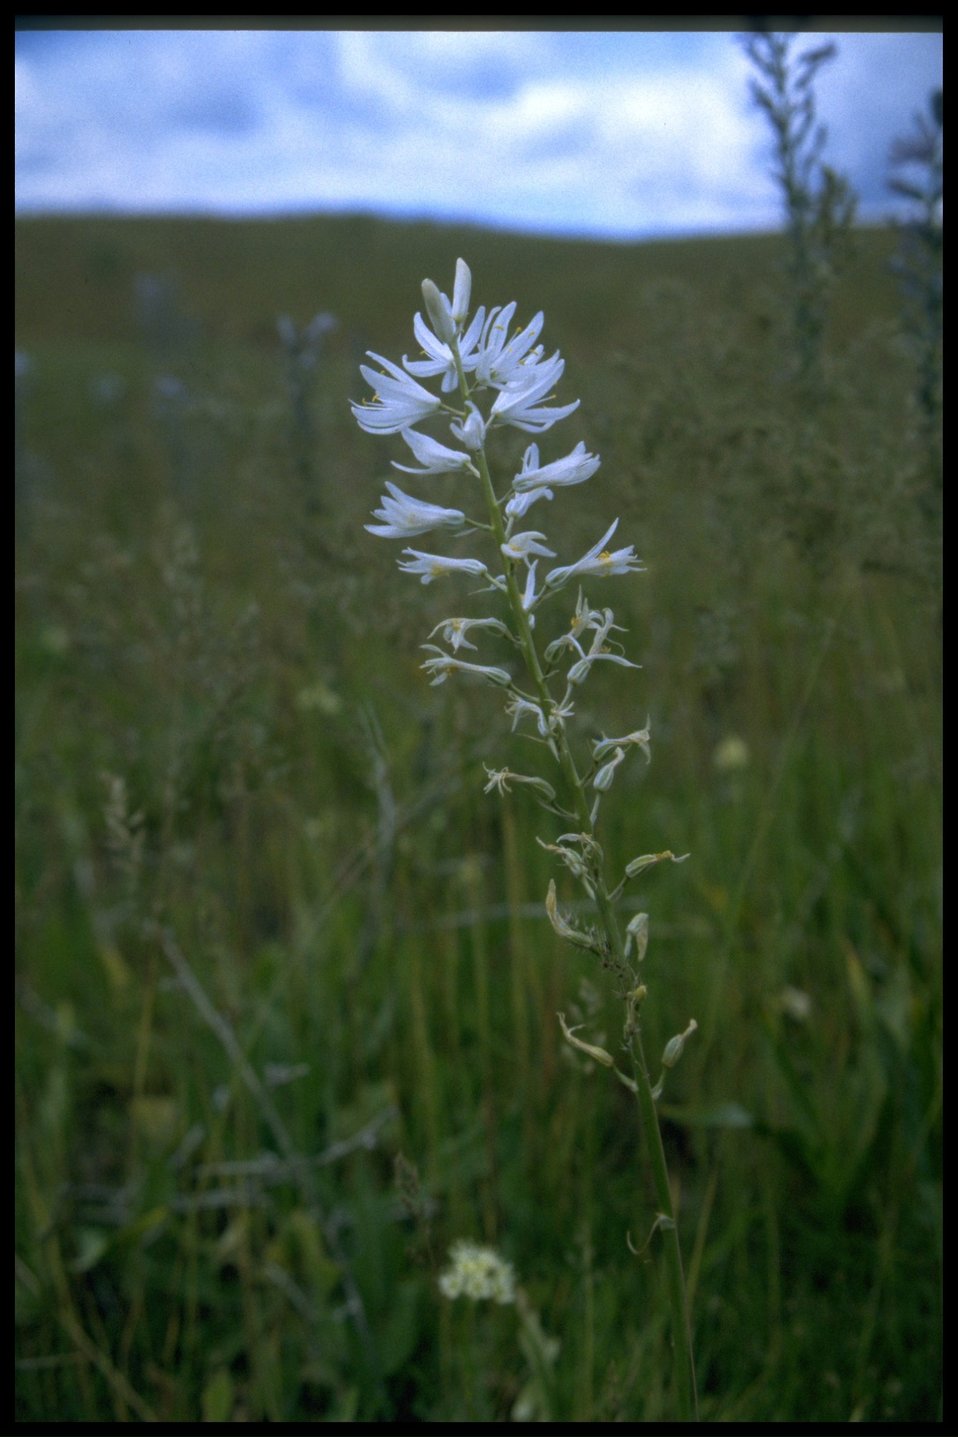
Medium shot of Cusick's Camas wildflower - albina variant.